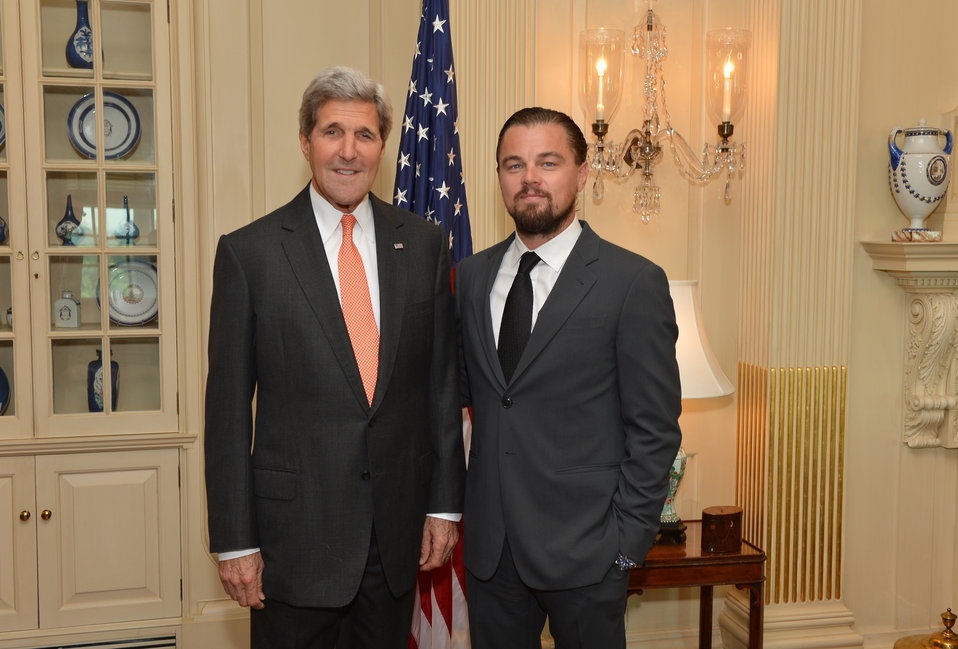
Secretary Kerry Poses for a Photo With Leonardo DiCaprio

U.S. Secretary of State John Kerry Poses for a photo with Leonardo DiCaprio at the U.S. Department of State in Washington, D.C. on June 17, 2014.